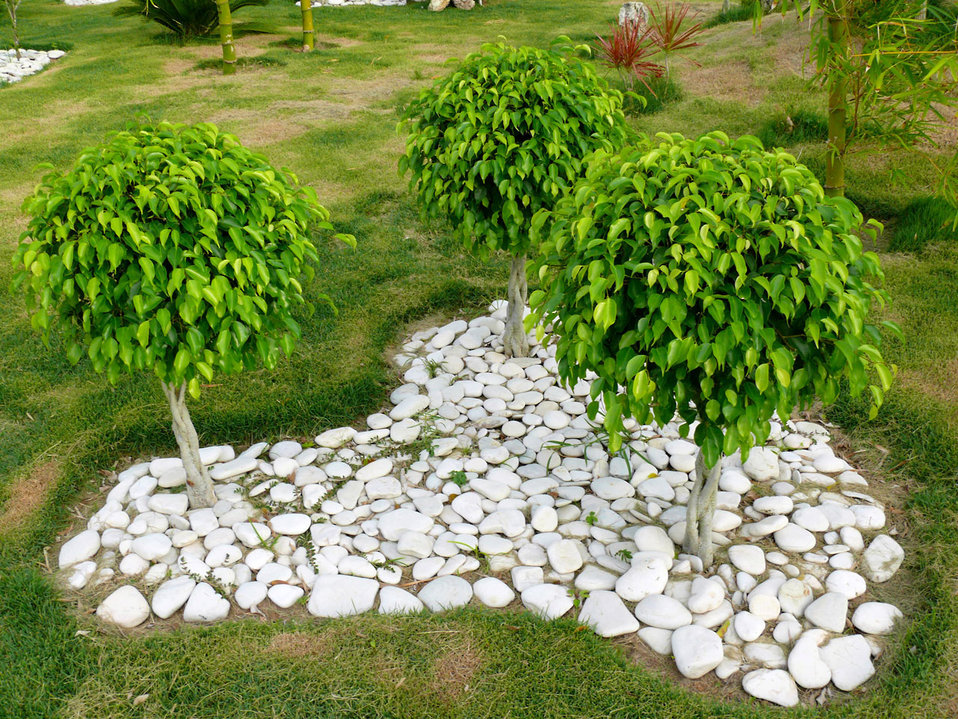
Three trees

Three benjamin plants.